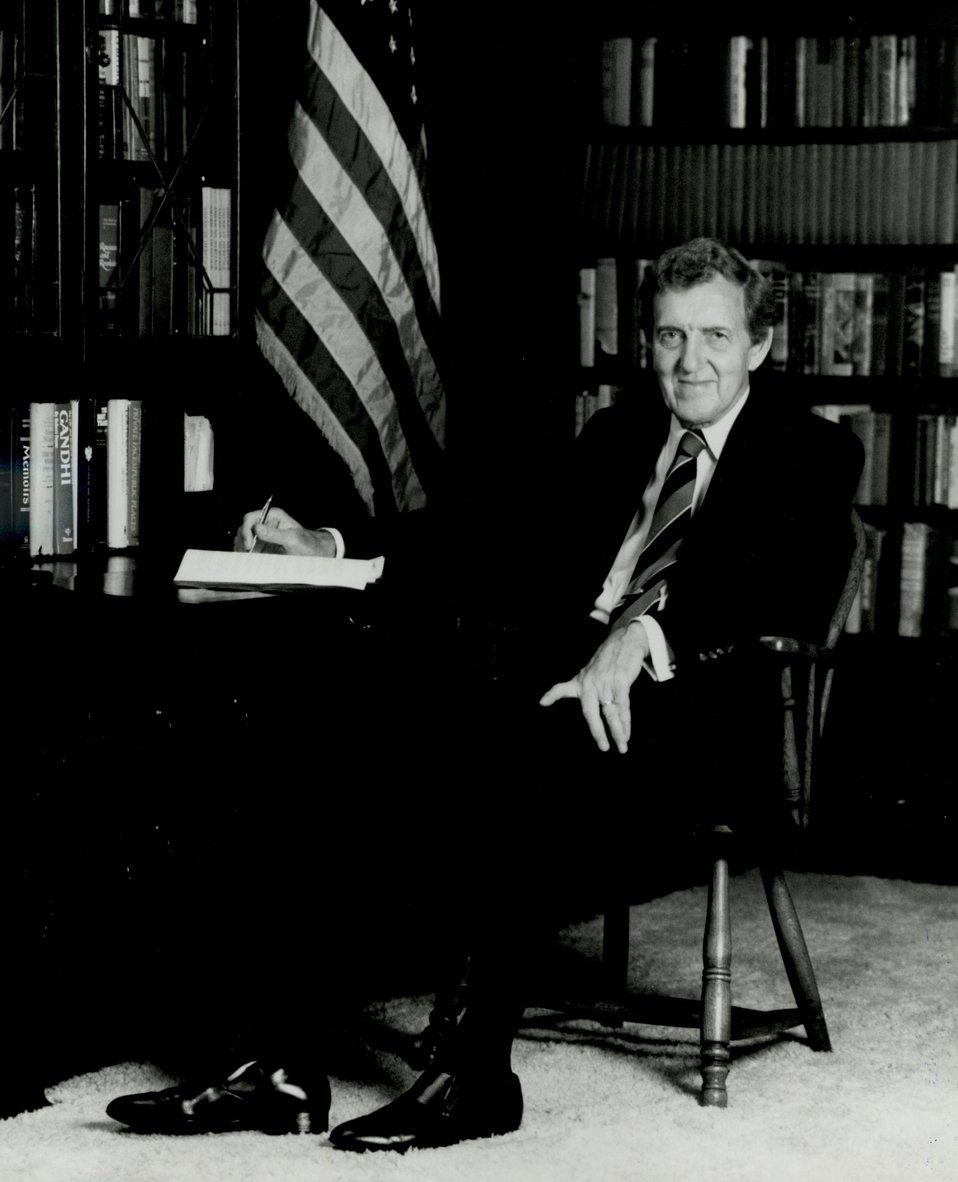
Edmund Sixtus Muskie, U.S. Secretary of State, May 8, 1980 to January 18, 1981